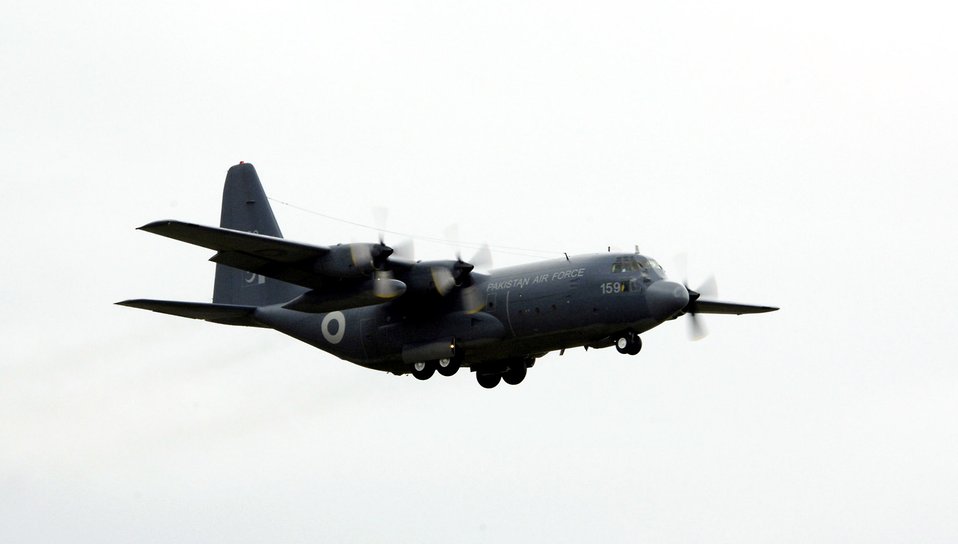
Rodeo 2007

A Pakistani C-130 flies over McChord Air Force Base, Wash., July 19 prior to the start of international competition for Rodeo 2007. Air Mobility Command's Rodeo 2007 is a readiness competition of U.S. and international mobility air forces. It focuses on improving warfighting capabilities and support of the war on terrorism.